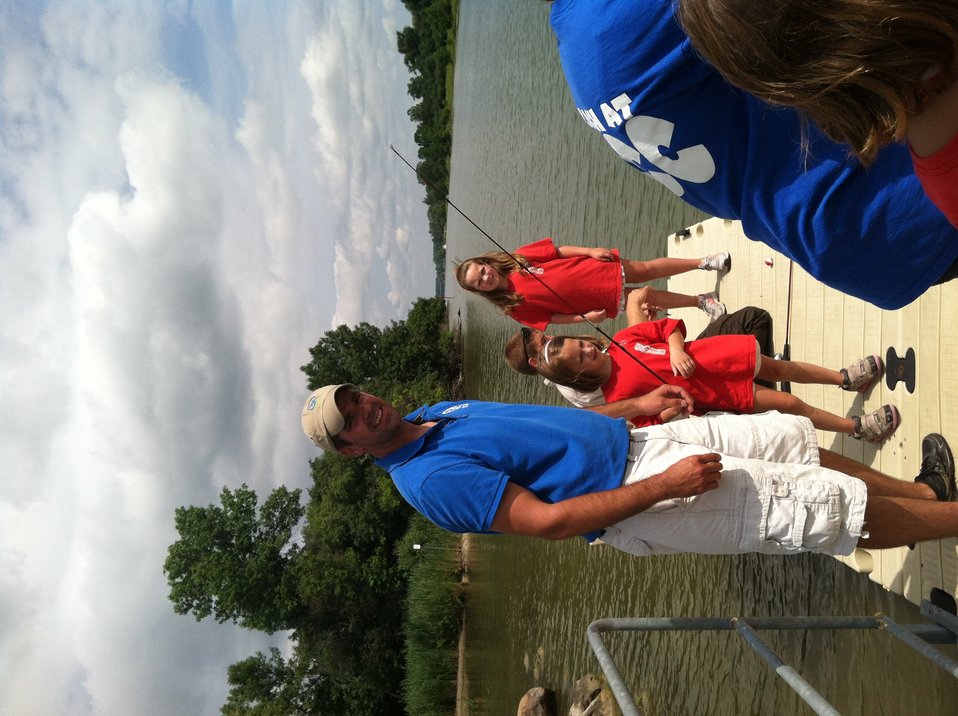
Career Discovery Intern, Tyler Barriere, helps kids fish at Montezuma NWR

U.S. Fish and Wildlife Service